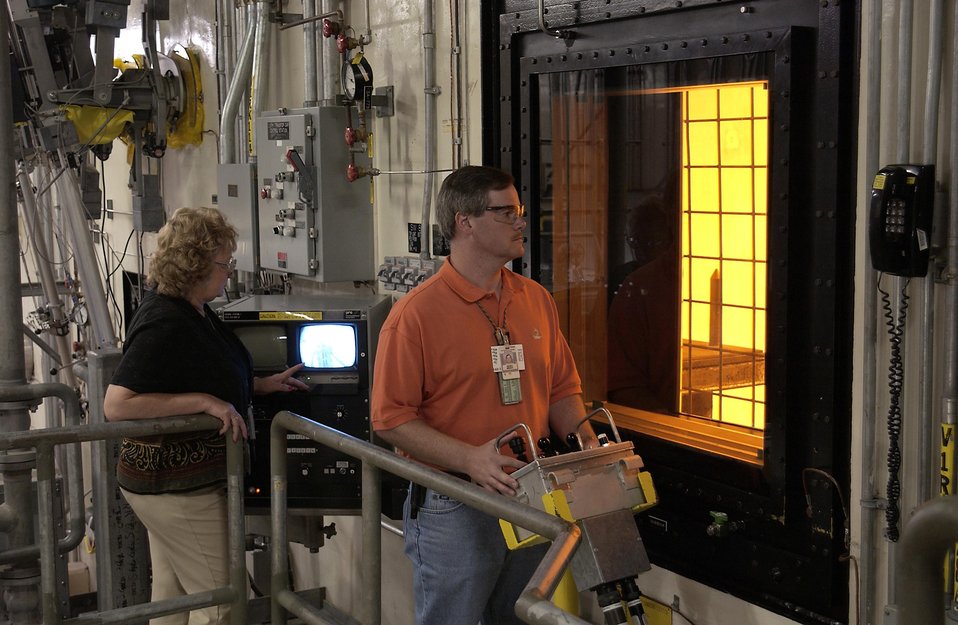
DWPF EMPLOYEES PERFORMING AND MONITORING REMOTE OPERATIONS.

SAVANNAH RIVER SITE'S DWPF IS DESIGNED TO CONVERT HIGH LEVEL LIQUID DEFENSE NUCLEAR WASTE INTO BOROSILICATE GLASS, A STABLE FORM SUITABLE FOR STORAGE, TRANSPORTATION AND REPOSITORY STORAGE. THE WASTE TO GLASS PROCESS IS KNOWN AS VITRIFICATION. THE RADIOACTIVE WASTE IS FUSED WITH SAND AT A TEMPERATURE OF 2,000 DEGREES IN A LARGE CRANE OPERATED STEEL MIXER, POURED INTO STAINLESS STEEL CANISTERS TO HARDEN INTO A BLACK GLASS. THE SEALED CANISTERS ARE STORED VERTICALLY IN SLOTS ON A CONCRETE SLAB UNTIL THEY CAN BE MOVED TO A SAFE REPOSITORY.